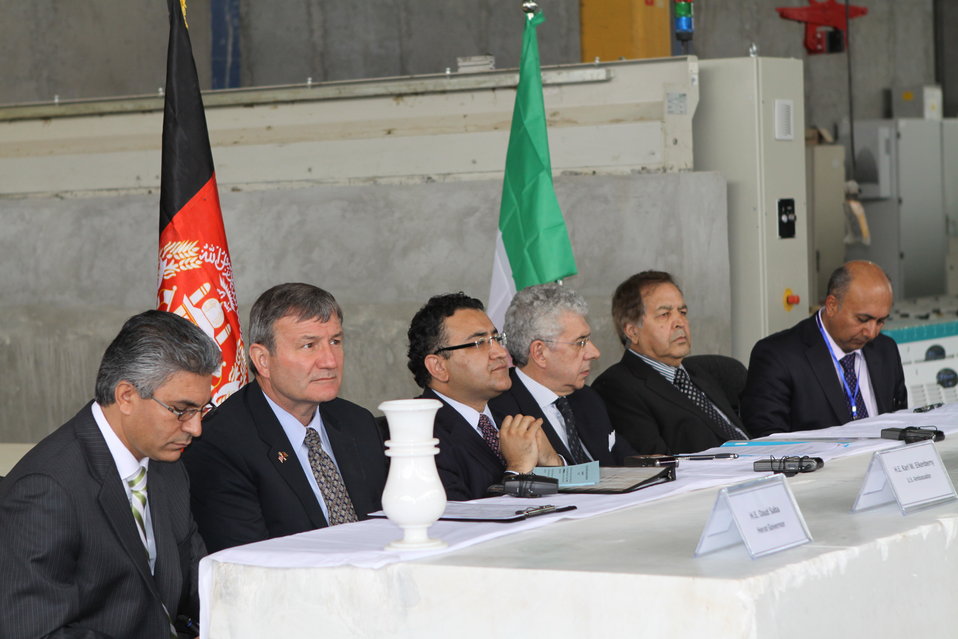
100525 Hirat Marble Conference 136